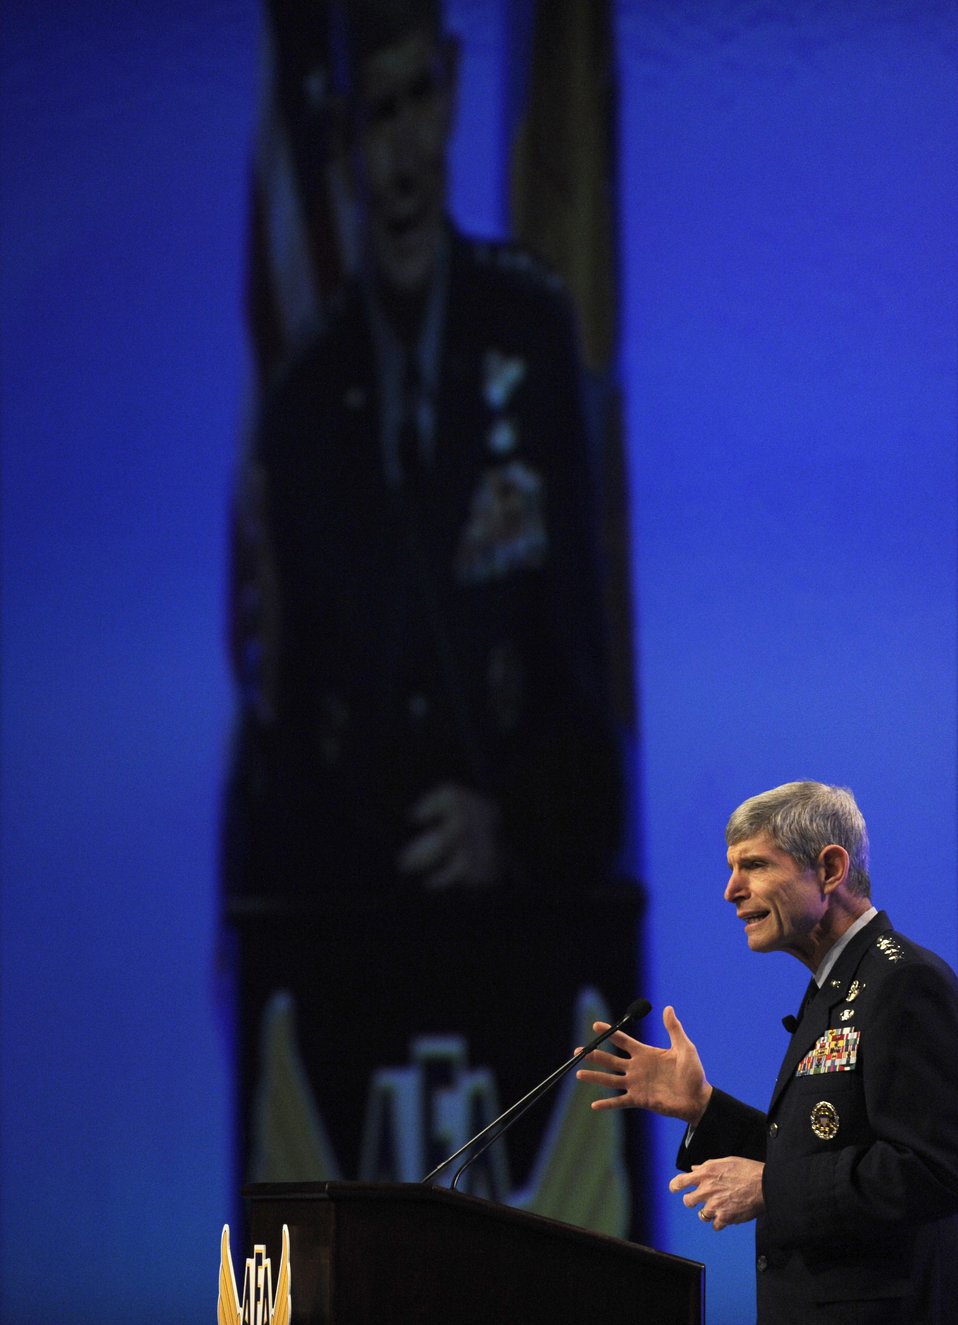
Chief of staff highlights importance of space to Air Force mission

Air Force Chief of Staff Gen. Norton Schwartz addresses an audience of nearly 500 during the Air Force Association's Air Warfare Symposium and Technology Exposition Feb. 18, 2010, in Orlando, Fla. The general highlighted the importance of space to the Air Force mission.